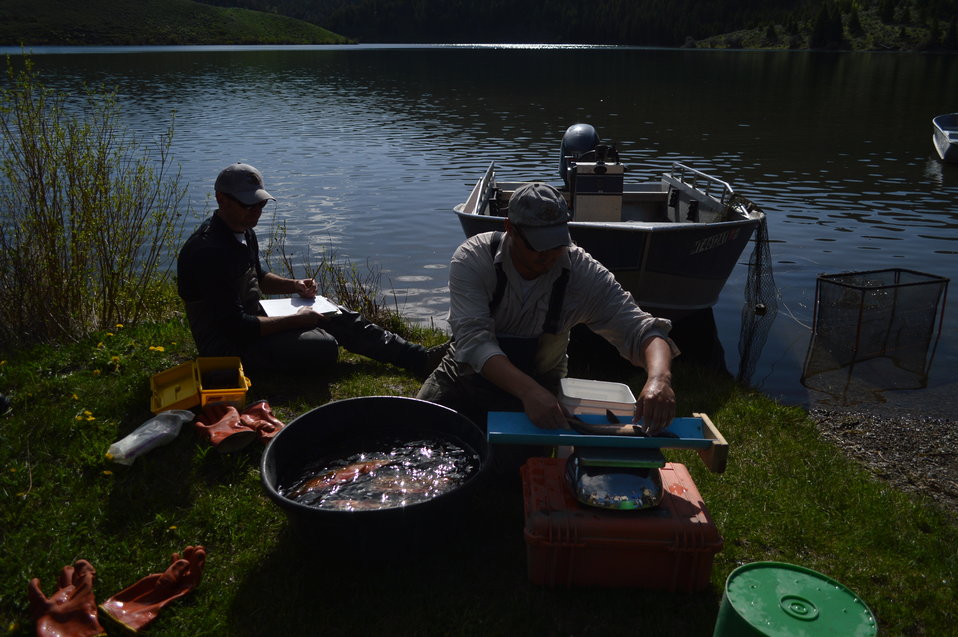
Regional Leadership Visit to Montana 2014